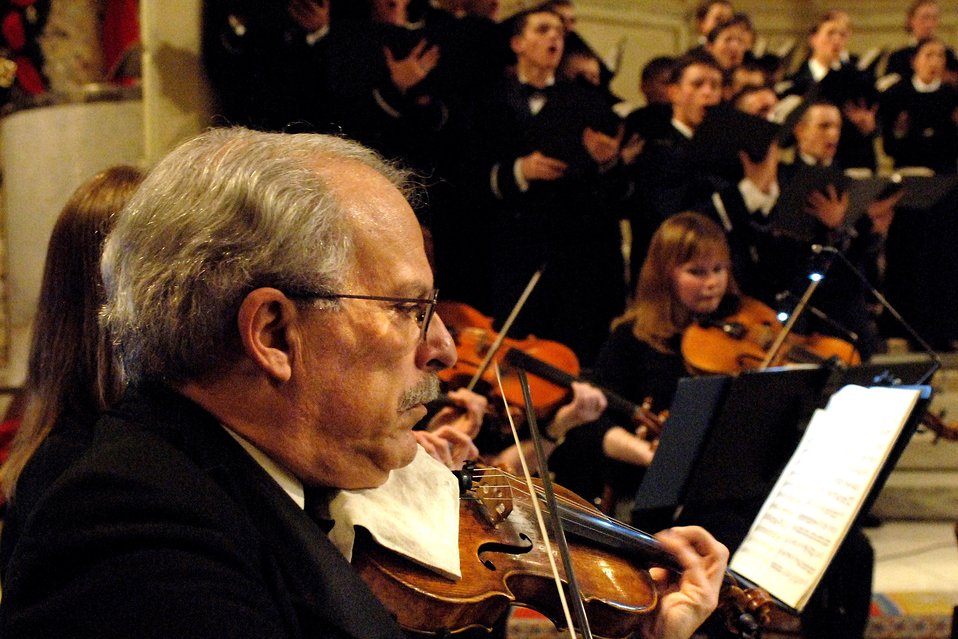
Cadet concert

B.J. Berman performs during the annual U.S. Air Force Academy's